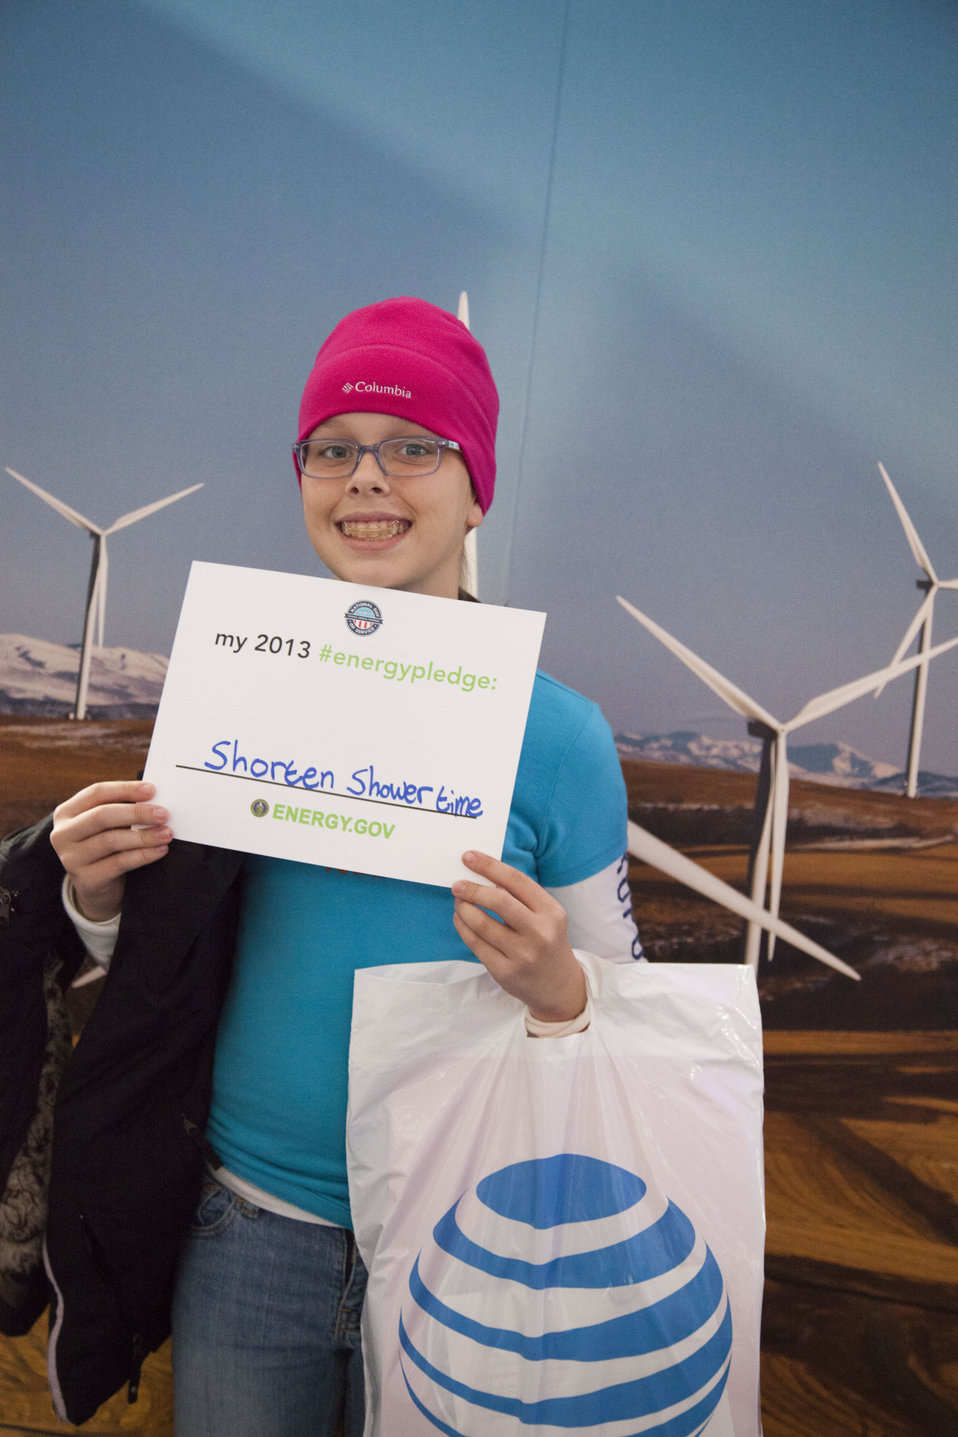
What's your #energypledge?